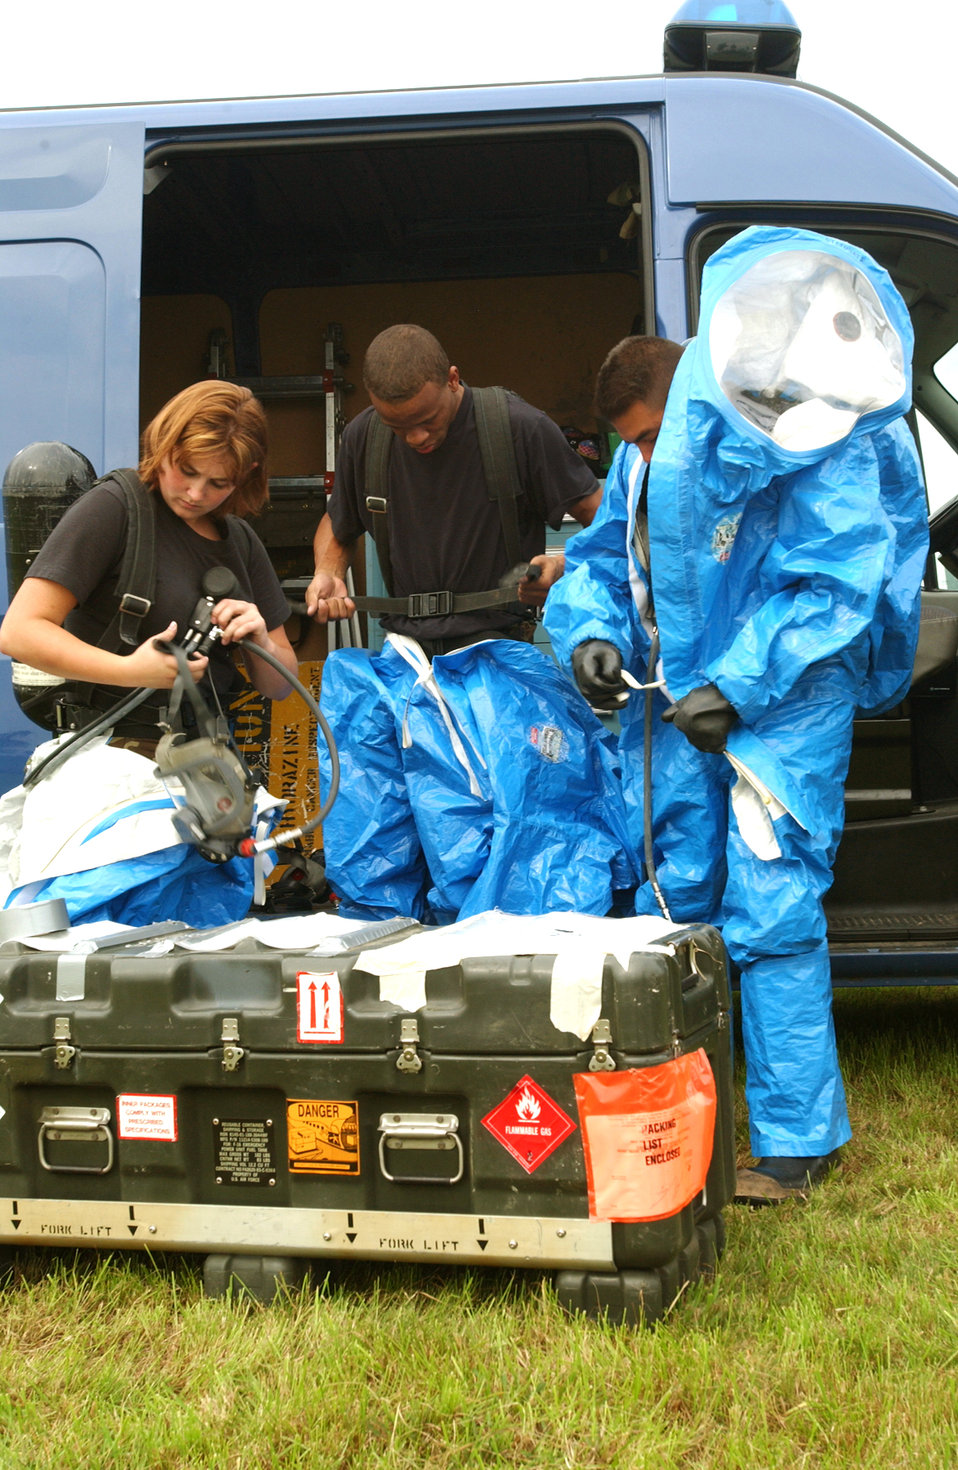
Officials provide update on F-16 crash

Crash and recovery Airmen from the 52nd Fighter Wing at Spangdahlem Air Base, Germany, suit up before begining assessment of an F-16 Fighting Falcon crash site. The F-16 crashed near the town of Oberkail. The pilot safely ejected from the aircraft.